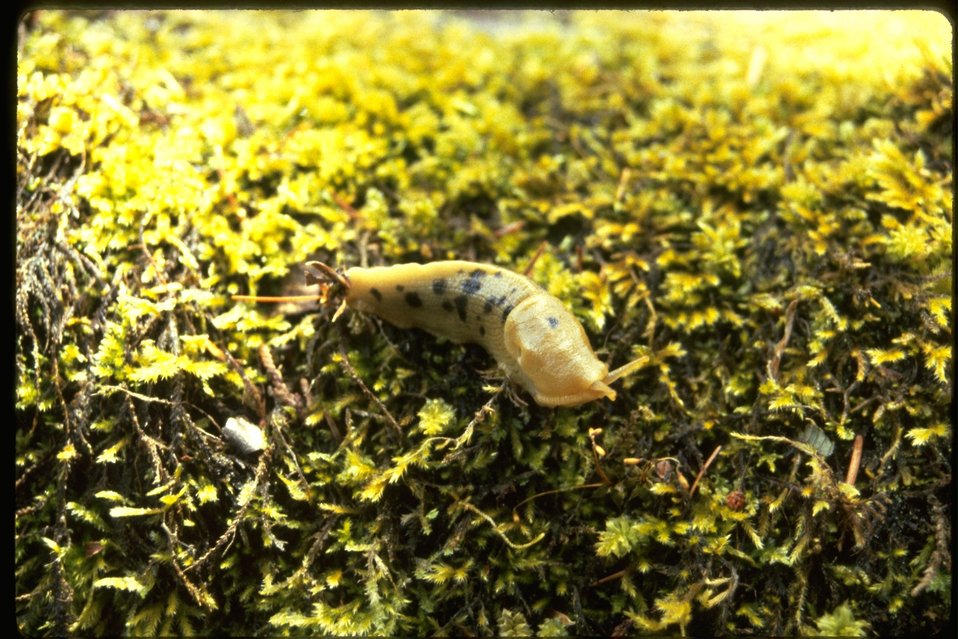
Macro shot of a banana slug.